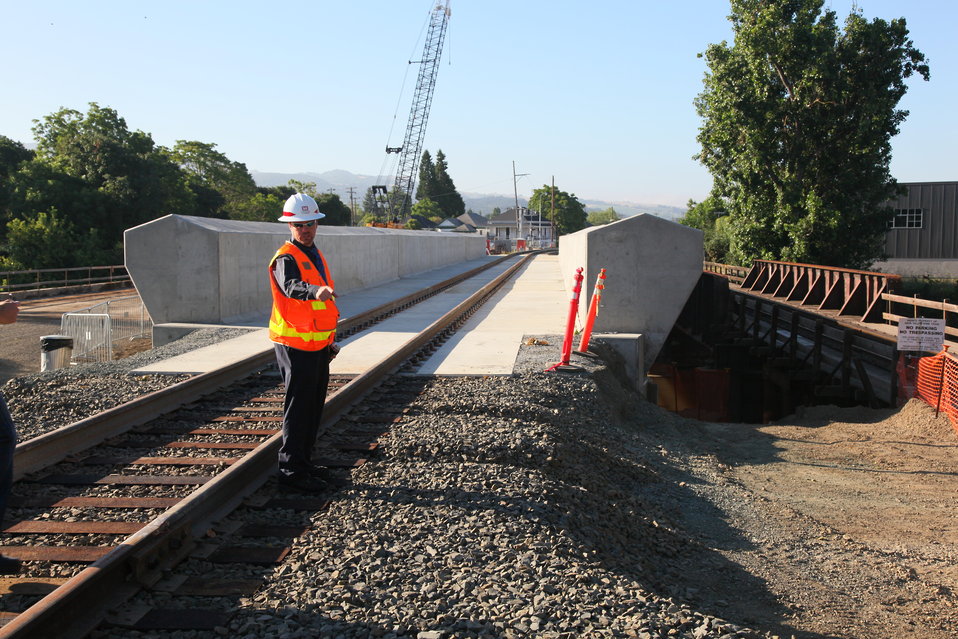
New railroad bridges open in Napa

Dave Cook, U.S. Army Corps of Engineers Sacramento District project manager for the Napa River-Creek Flood Protection Project, inspects a new railroad bridge in Napa, Calif., before its official opening June 22, 2011. The Sacramento District built the bridge to replace a lower adjacent railroad bridge that blocked the Napa River in high water, often causing flooding in downtown Napa. The project is part of the larger Napa River-Creek Flood Protection Project, a joint effort of the Corps, the city of Napa, and the Napa Flood Control and Water Conservation District to reduce flood risk for the city. “The older bridges around here basically become a trash rack during high water flows,” Cook said about accumulating debris. “We relocated these tracks up and over so the water can make its way downstream a lot easier.”